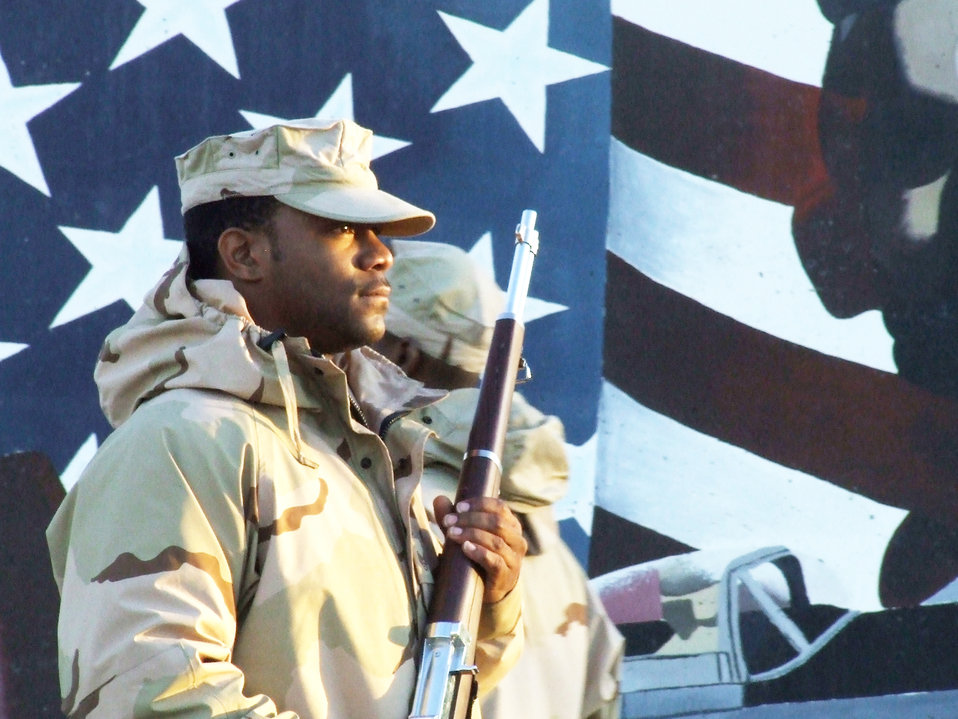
Ever watchful

Staff Sgt. Stacy Green, 332nd Expeditionary Security Forces Squadron, stands sentinel duty on Veterans Day at Joint Base Balad.Iraq. The 332nd Air Expeditionary Wing held a 24-hour vigil to honor American veterans.